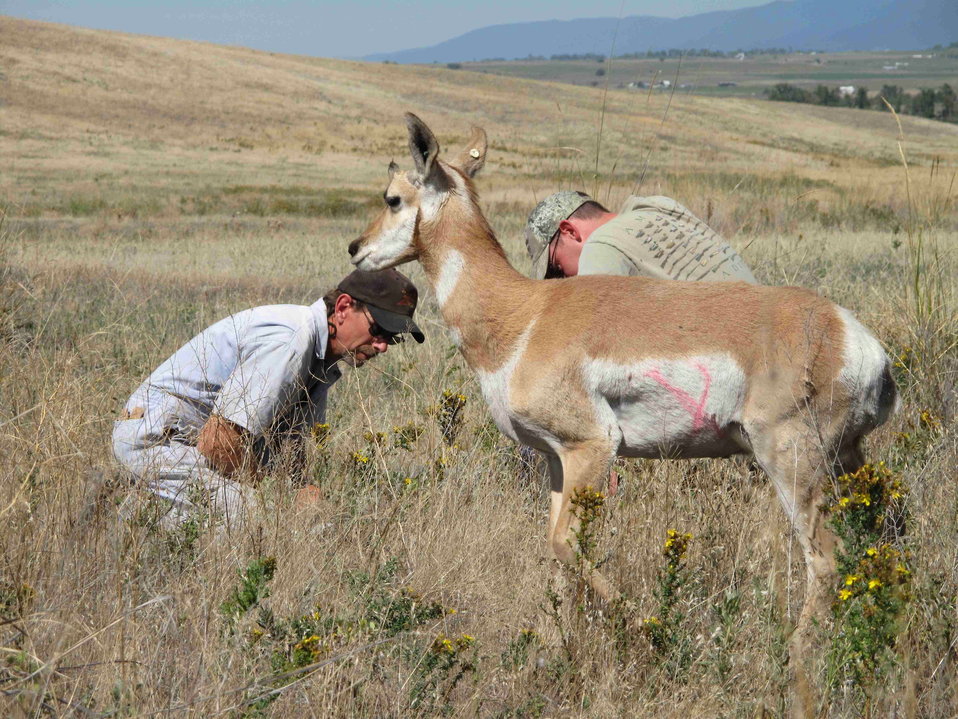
Pronghorn Fawn

Dr. Tom Roffe and Mike Borgreen investigate a pronghorn fawn after it was immobilized as part of a university research project at the National Bison Range.